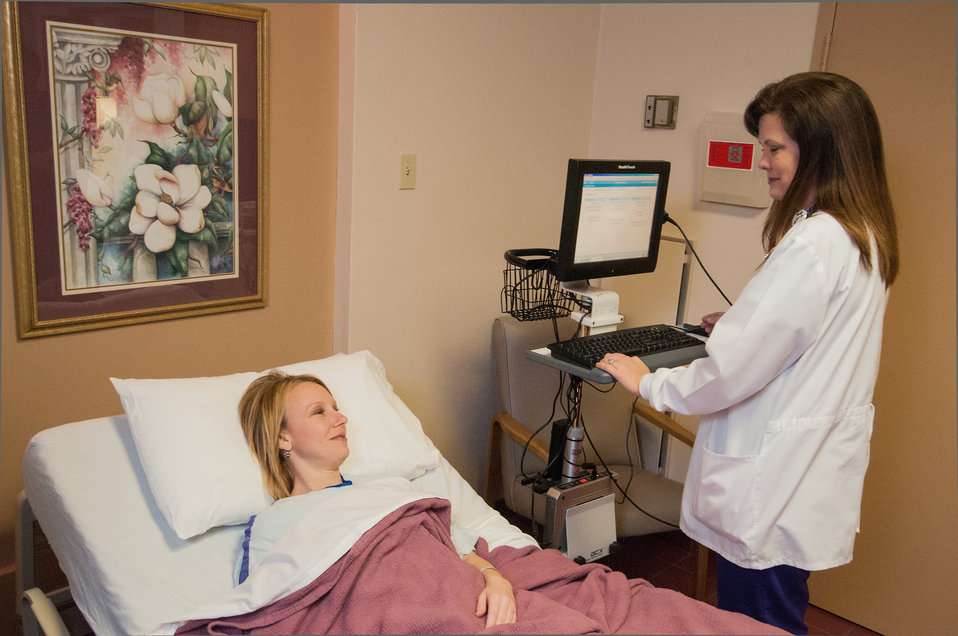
R.J. Taylor Memorial Hospital, Inc. Licensed Practical Nurse Dora Cater, LPN discusses a patients’ diagnosis and symptoms and records the information in the hospitals’ Electronic Medical Records System in Hawkinsville, GA on Mar. 6, 2013. The hospital is a licensed private, not-for-profit acute care facility providing emergency, specialty and primary health care in an area of rural Georgia that has a high percentage of people living below the state average poverty level and considered most economically distressed. The hospital has purchased an Electronic Medical Records System under an incentive program by the Federal government through the U.S. Department of Agriculture (USDA) Rural Development (RD) Community Facilities Loan (CF) that ensures fiscally responsive access to superior quality integrated health care.